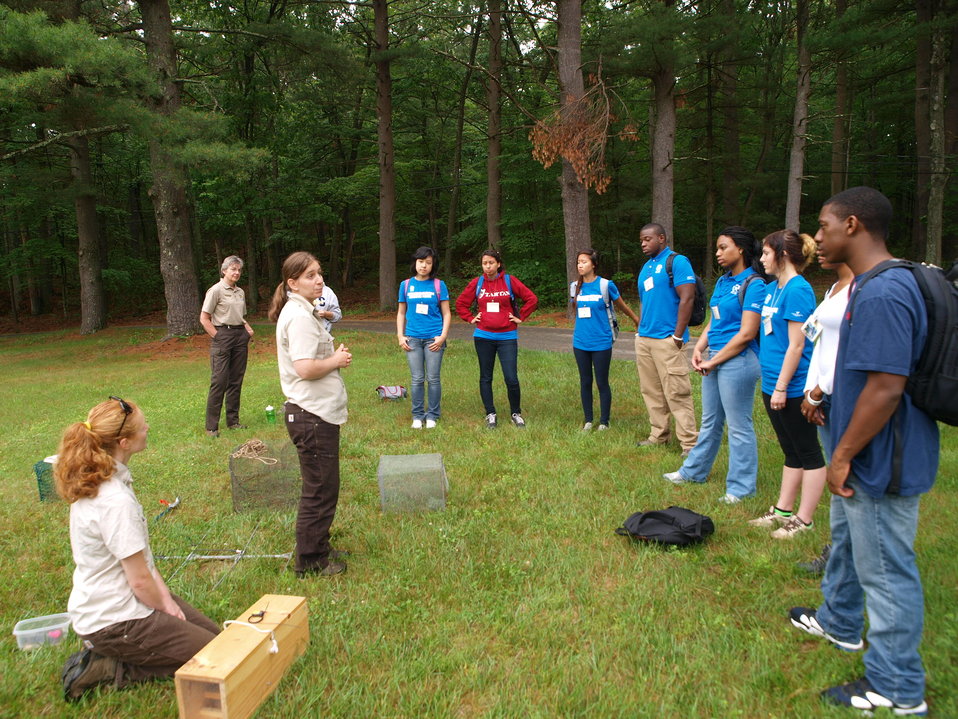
Refuge Biologists Explain Their Role

Refuge biologists explain telemetry and monitoring of turtles and other animals to CDIPs.